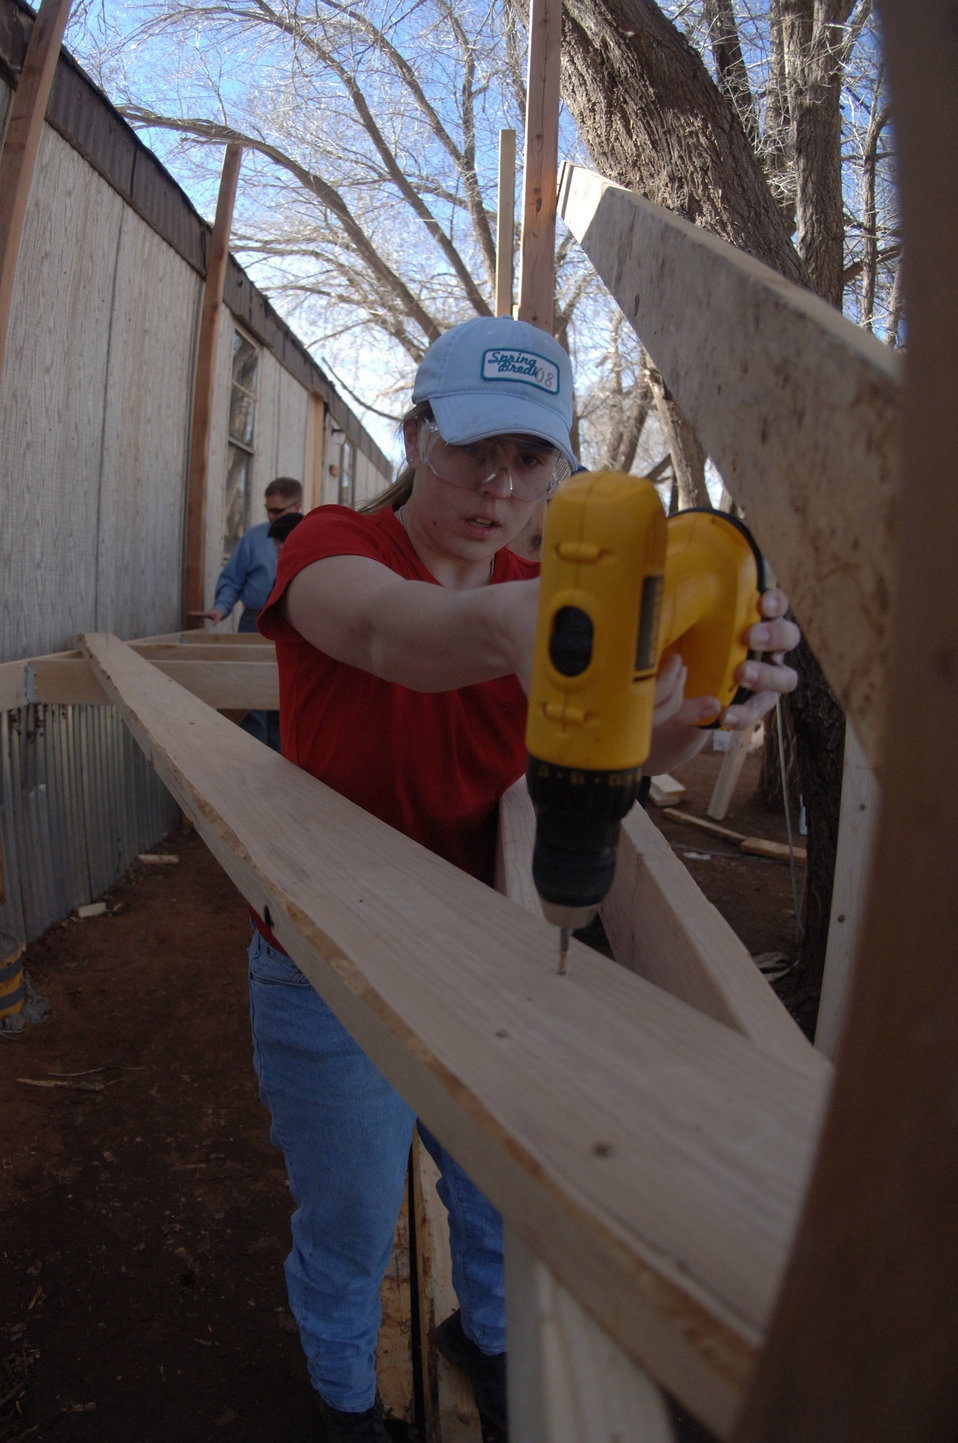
AF Academy volunteers renovate Navajo home

Air Force Academy Cadet 2nd Class Nicole Ramstein secures a screw on a porch during a volunteer build March 26 in Navajo, N.M. Cadet Ramstein along with a group of 20 cadets, faculty and family members, volunteered to work on the Navajo reservation during the Academy's spring break.